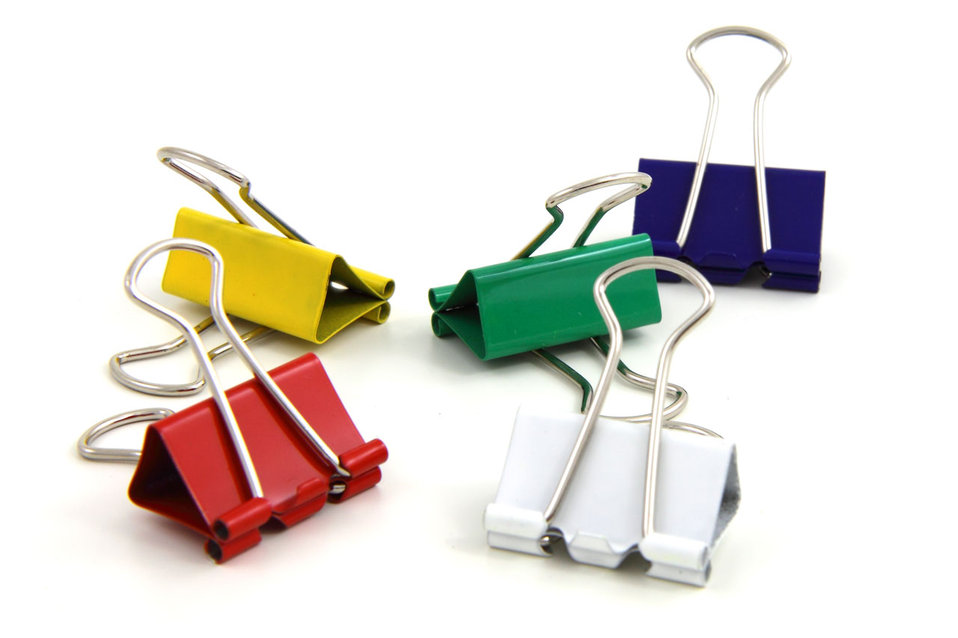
Binder clips

Colorful binder clips.